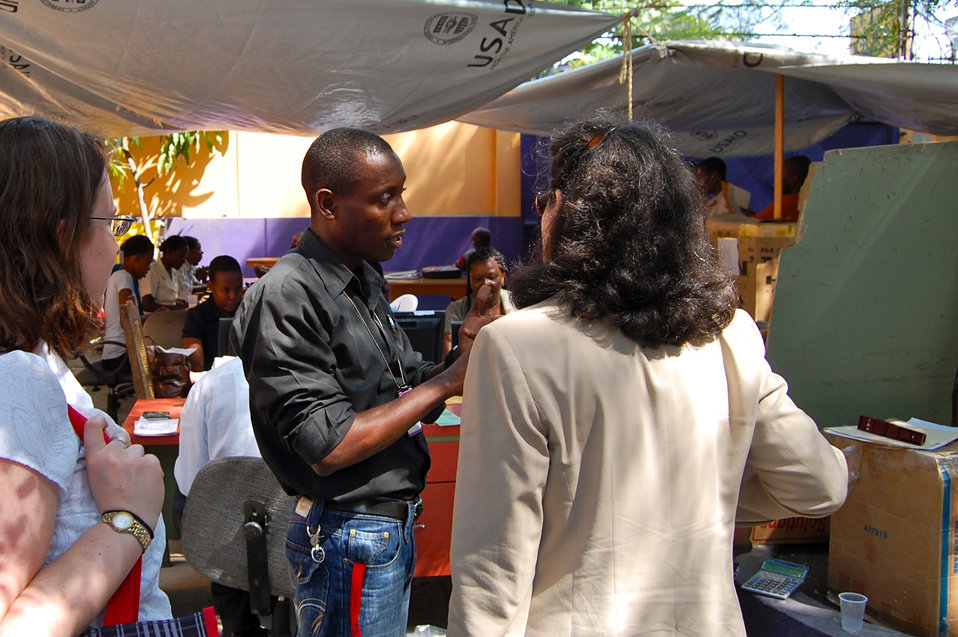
Haiti, One Year Later

Treasury Deputy Assistant Secretary Nancy Lee and staffer Erin Nephew visit a temporary site for distributing remittances (money sent to Haitians from abroad) run by Fonkoze, a Haitian microfinance institution. Treasury coordinated with other U.S. agencies and the Inter-American Development Bank to provide emergency cash for Fonkoze in nearly 40 remote villages when commercial banks remained closed.